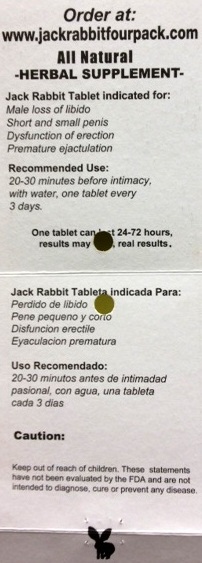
RECALLED – Jack Rabbit

August 12, 2013 – Product Recall – Jack Rabbit Inc. Conducts Voluntary Nationwide Recall of Lot 2510 of Jack Rabbit Dietary Supplement Due to undeclared ingredient.